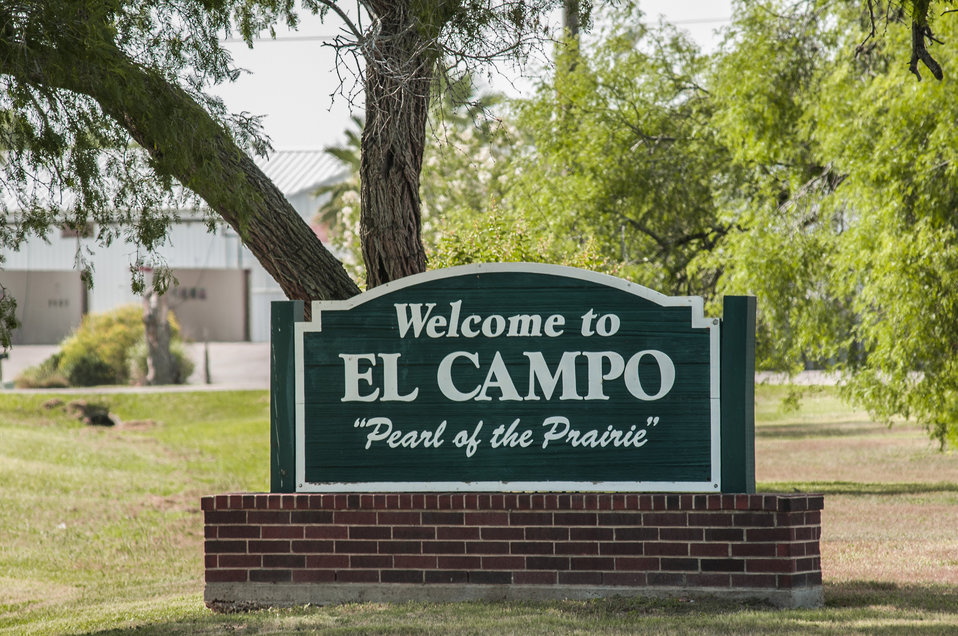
Welcome sign for El Campo TX, on Jun. 20, 2013 .USDA photo by Lance Cheung